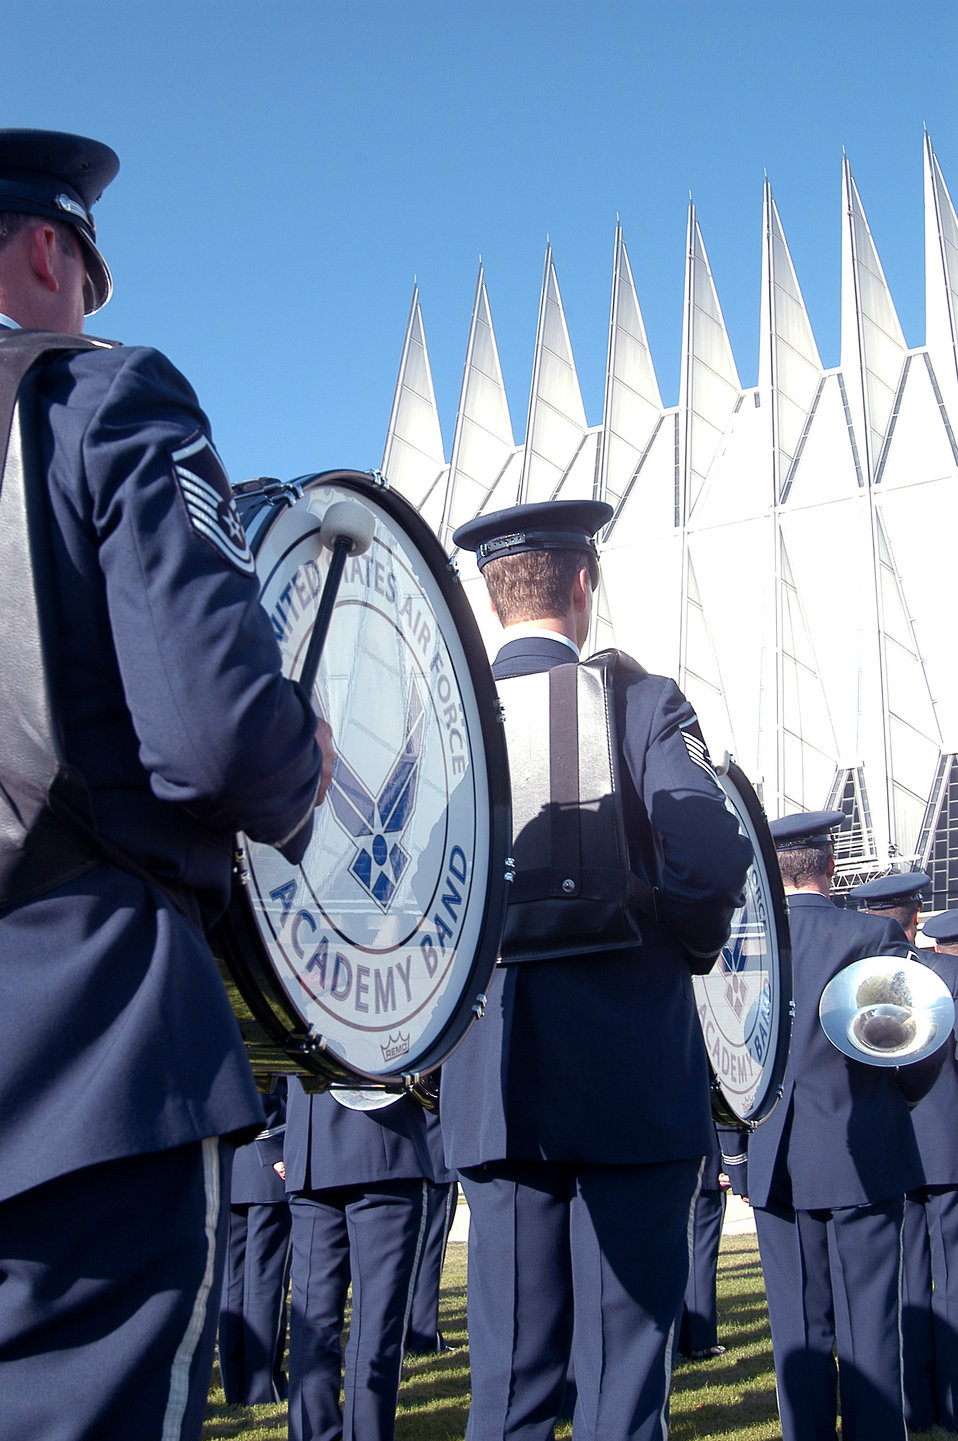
The band plays on

U.S. AIR FORCE ACADEMY, Colo. -- Airmen of the Air Force Academy Band march in front of the Cadet Chapel here at the band's transfer-of-command ceremony Sept. 30. The transfer realigns the band under the Air Force Academy from Air Force Space Command.